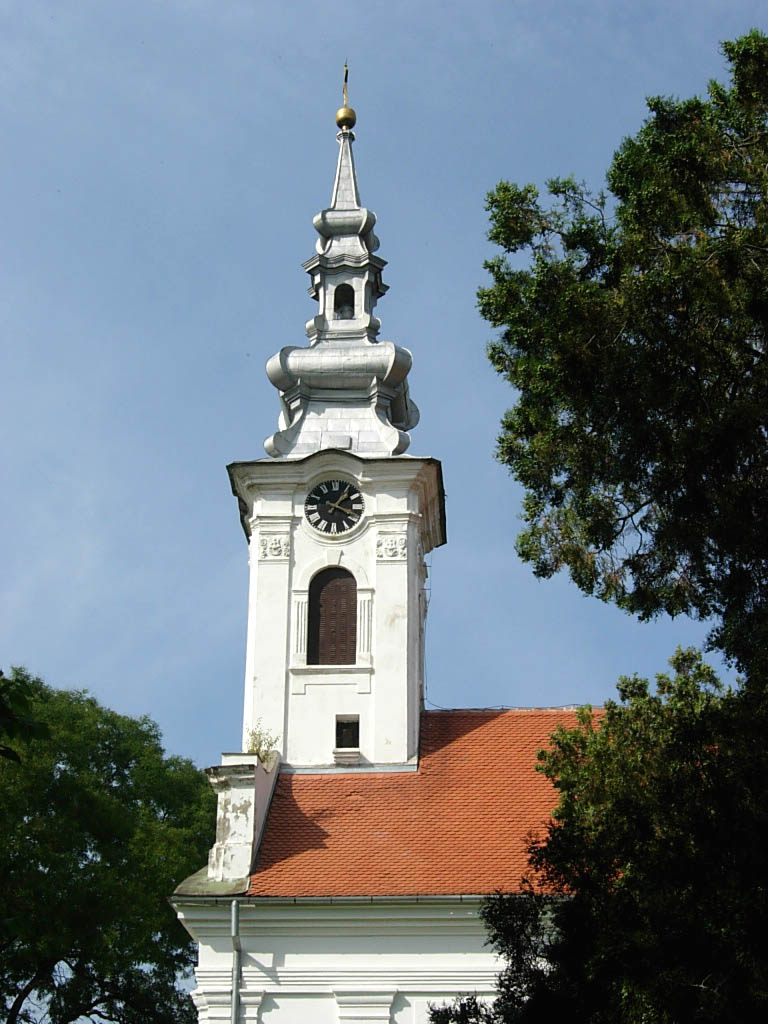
Jarkovac Orthodox church